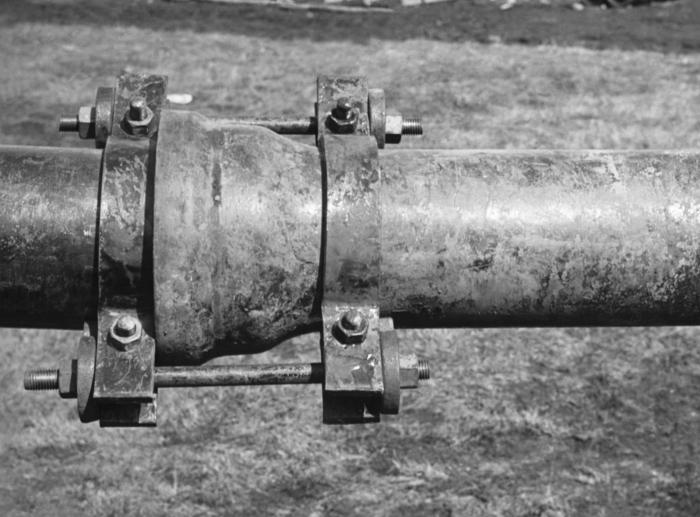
This historic 1939 photograph revealed some of the structural details seen in a home-made "bell joint clamp" that was used for large sewage and water pipes. Such a 'jury-rigged' clamp represented a potential portal where the contamination of a potable water resource could occur.